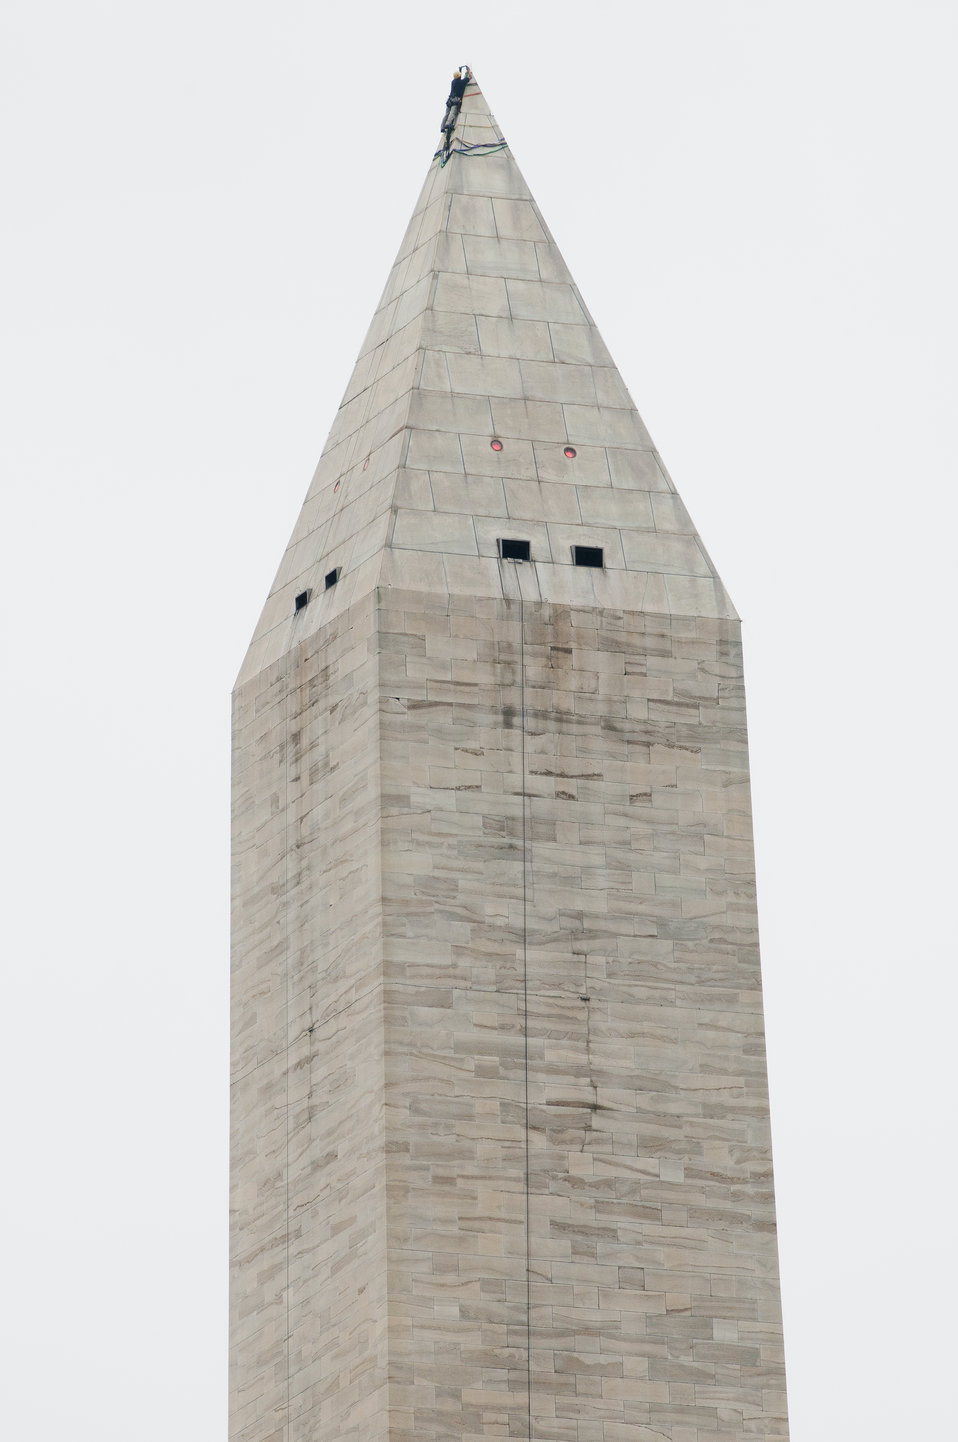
View from the U.S. Department of Agriculture Whitten Building of Dave Megerle, completing a day of rigging setup on the tip (pyramidion) of the Washington Monument on Tuesday September 27, 2011. The rigging will be used by a four-person that will rappel down the four sides of the monument and help document damage from the August 23, 2011 5.8-magnitude earthquake and following storm weather. They will also fill cracks with sealant to help protect it from water and ice damage until repairs can be completed.